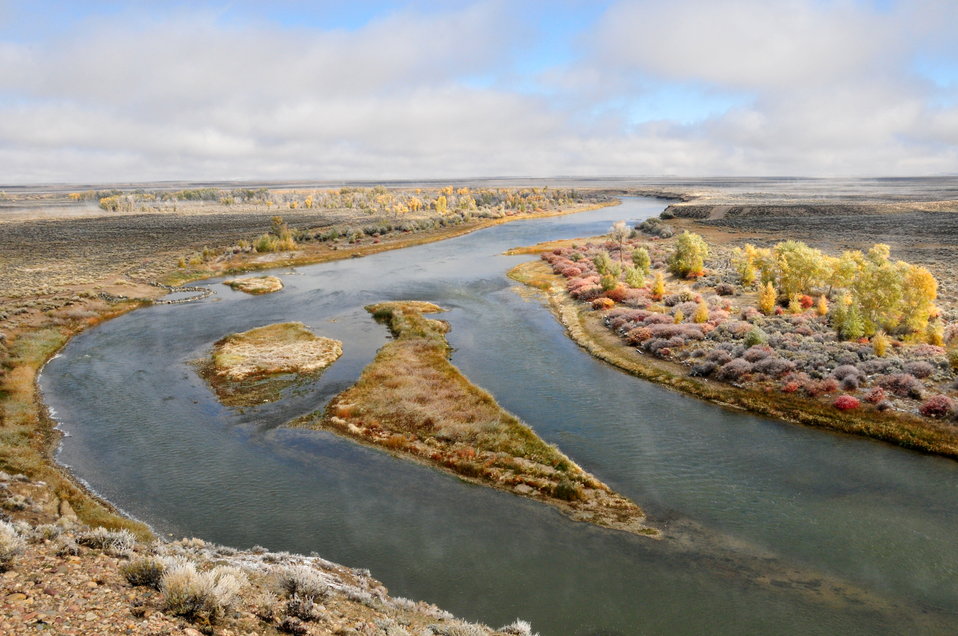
Green River on Seedskadee NWR at Horseshoe Bend

The Green River on Seedskadee NWR at Horseshoe Bend.